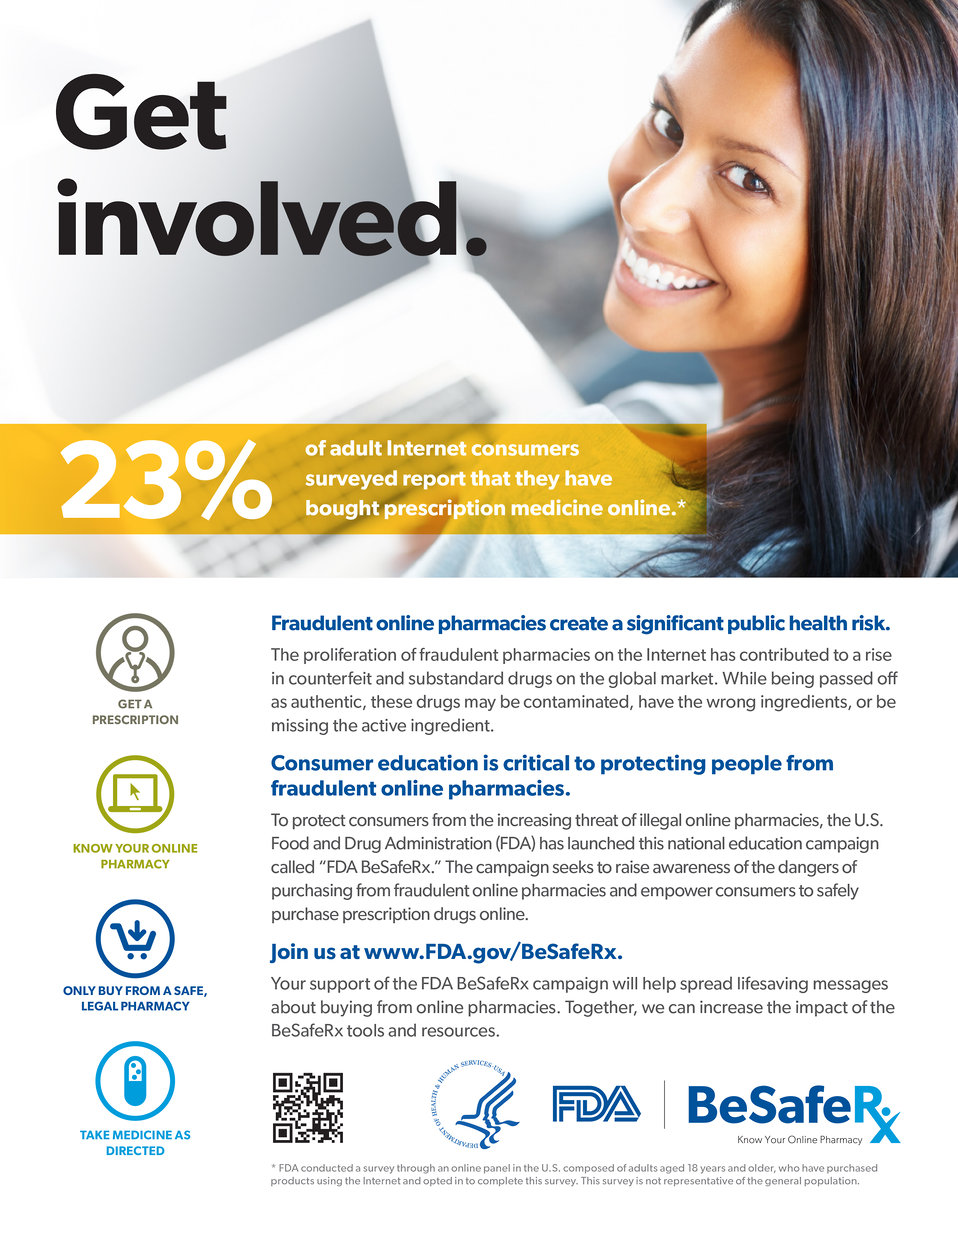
BeSafeRx Advocate

A high quality PDF of this public service announcement is available at: BeSafeRx Campaign Materials

This is your one-stop resource for all materials associated with the FDA BeSafeRx campaign. FDA developed these materials to educate consumers about the risks associated with fake online pharmacies and how to safely purchase prescription medicine online. Put them to work for you!